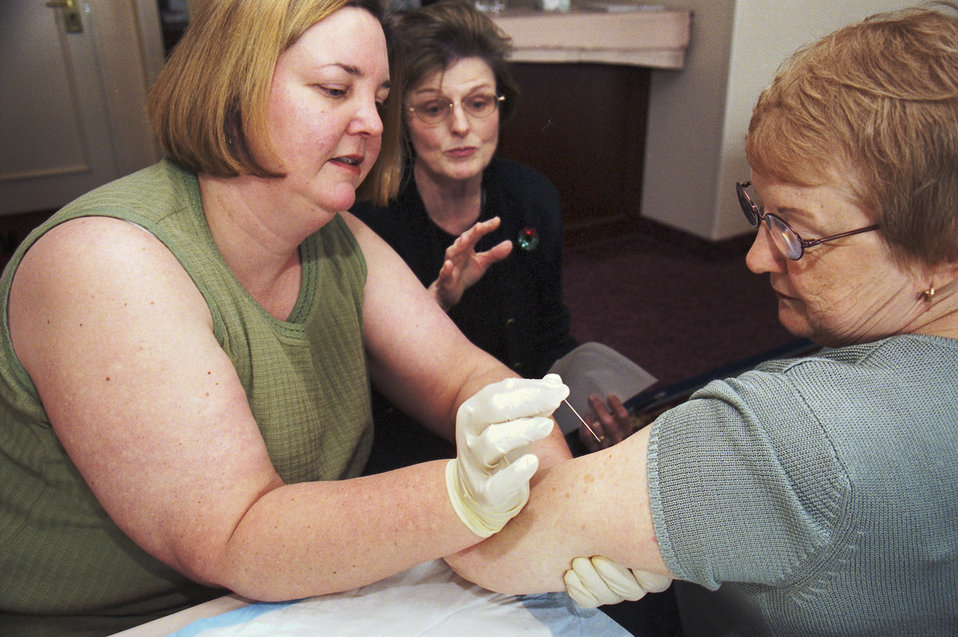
Lorna Will (Left) and Jacqueline Kowalski practice proper technique with a bifurcated needle as trainer Judy Gibson observes.